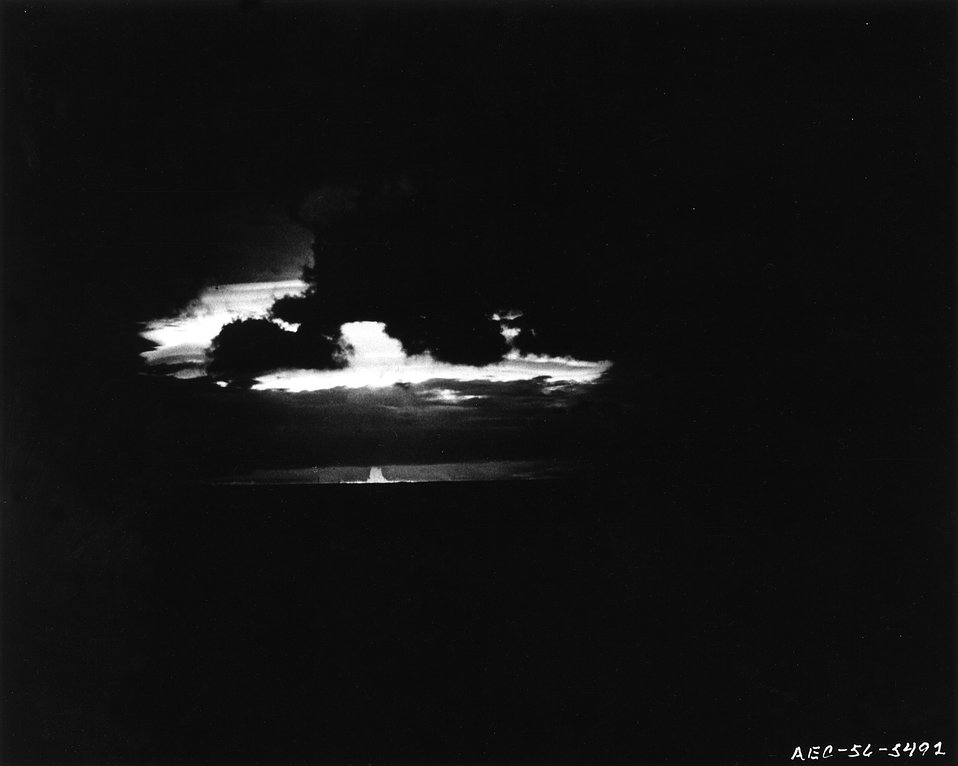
Fireball of the May 21, 1956 test detonation over Bikini Atoll.